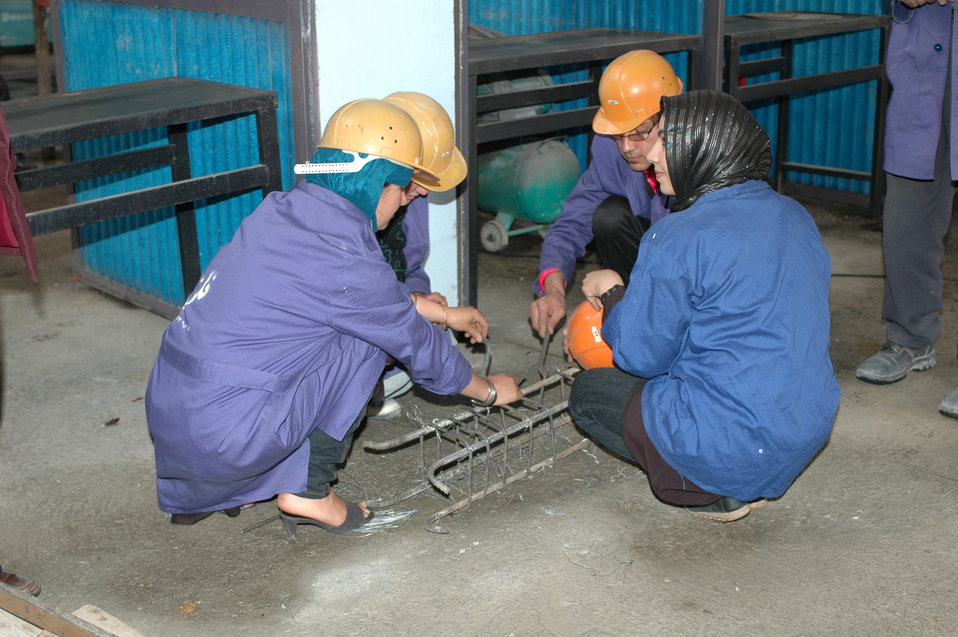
Dr Shah Visits Votech in Kabul